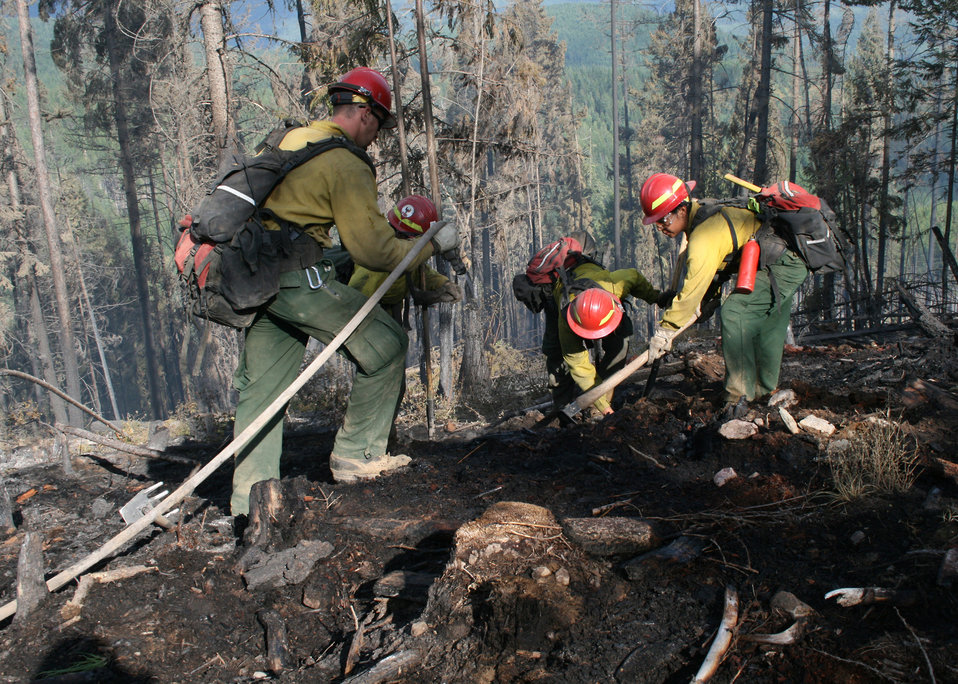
Firefighters supported by three fire engines, two helicopters, two water tenders, a dozer and an air tanker battled to contain the 90 acre Rogers Fire located on Mt. Rogers five miles west of Aladdin, WA on the Colville National Forest. Firefighters worked under adverse conditions with steep terrain and gusting winds to reduce the loss of timber and protect the Rogers Mountain Trail. The Rogers Fire began on Aug. 9, 2011 and was controlled by Aug. 19, 2011 with mop up crews ensuring that no flare-ups occurred. Colville National Forest has 1.1 million acres in northeastern Washington and includes the Kettle River, Selkirk Mountain ranges, and the upper reaches of the Columbia River.